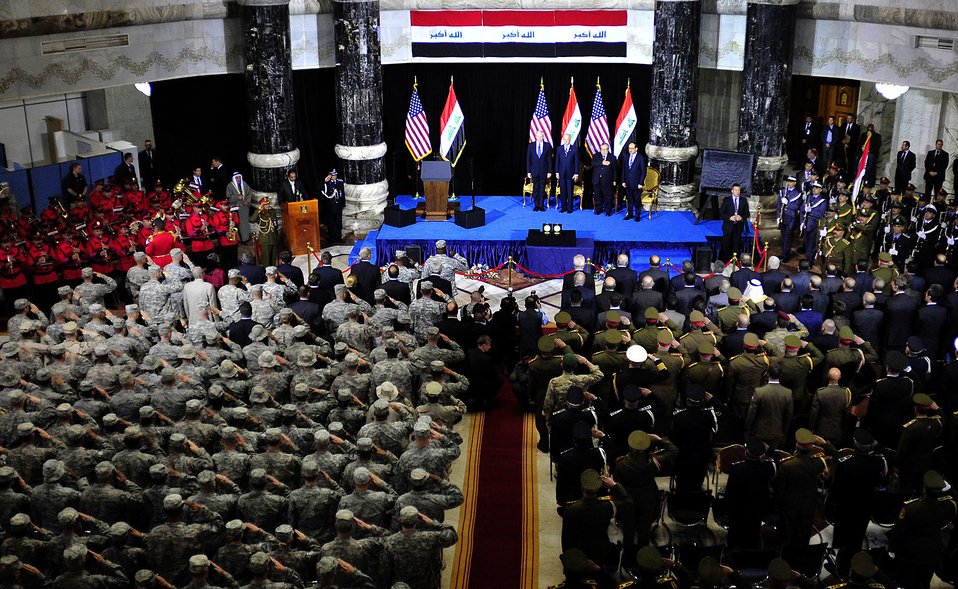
Biden, al-Maliki honor troops' sacrifices during Day of Commitment Ceremony

James F. Jeffrey, the U.S. ambassador to Iraq (left), U.S. Vice President Joe Biden, Iraqi President Jalal Talabani, Iraqi Prime Minister Nouri al-Maliki stand and salute with U.S and Iraqi service members during the singing of the Iraqi and U.S. national anthems during the Government of Iraq Day of Commitment Ceremony in the Al Faw Palace at Victory Base Complex, Iraq, Dec. 1, 2011.